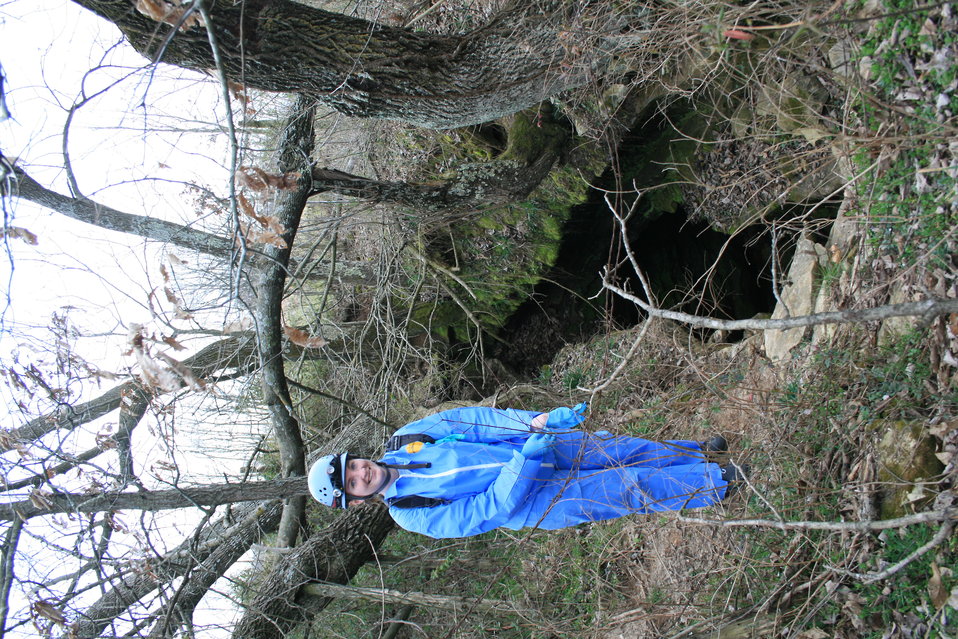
MDC biologist at cave entrance